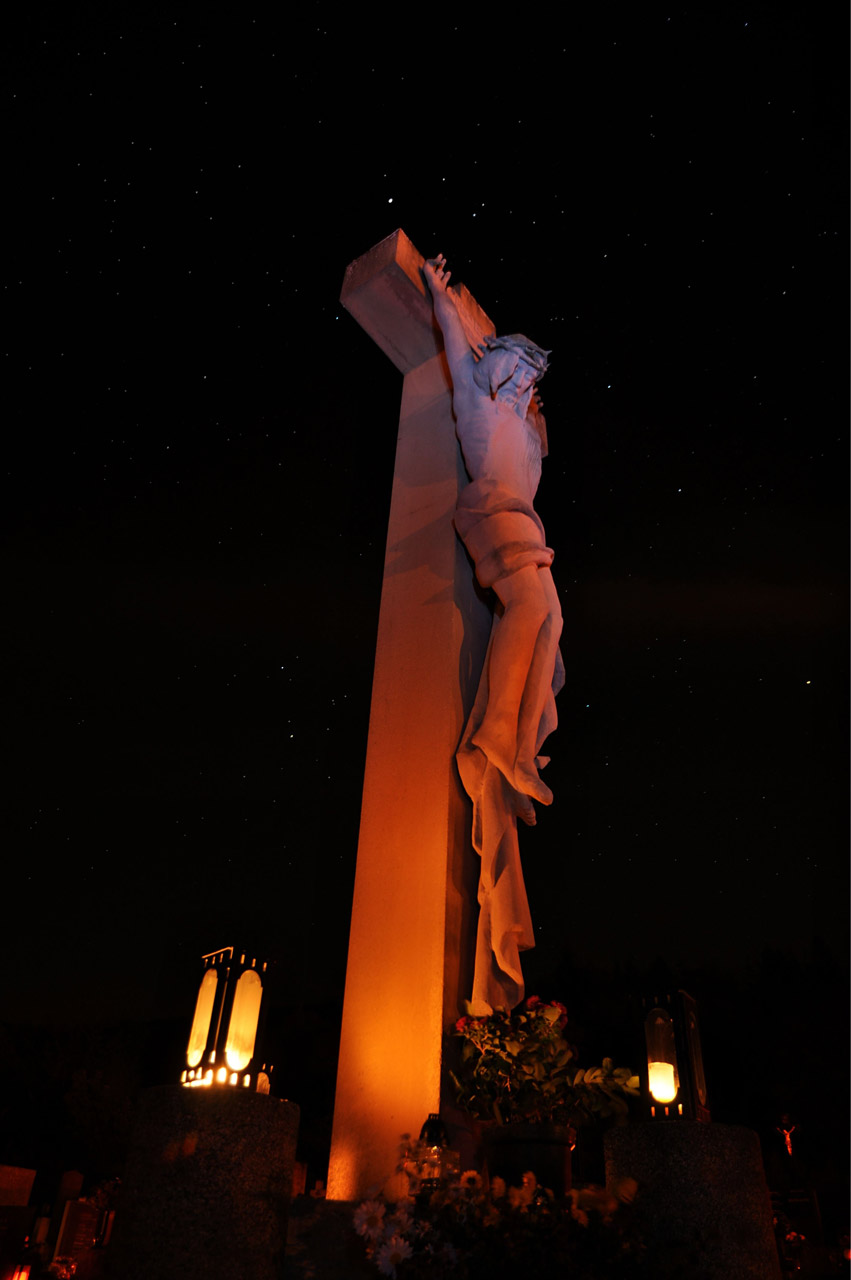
Jesus on the cross.